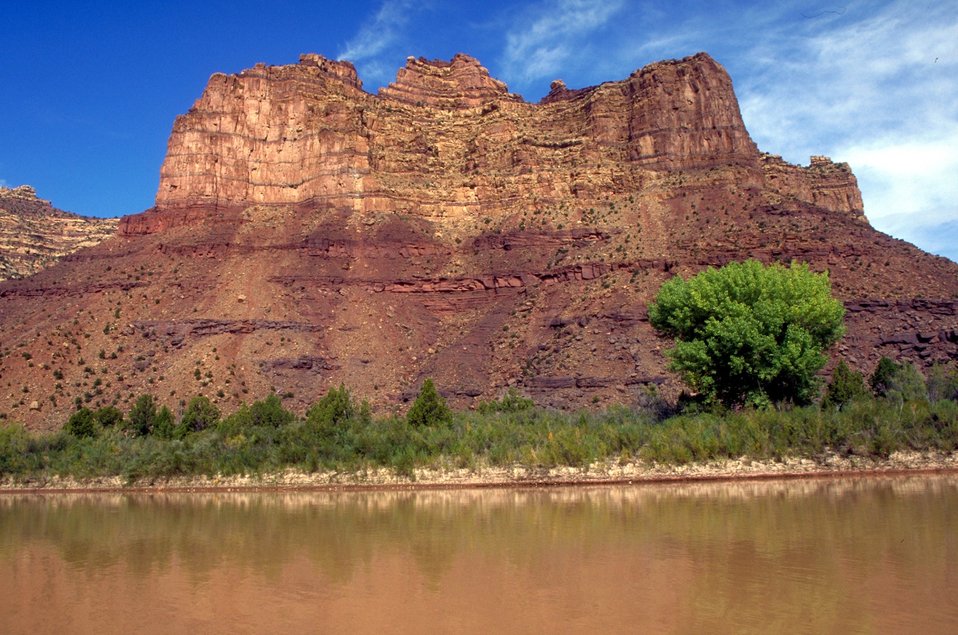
Desolation/Gray Canyons near Price, Utah.